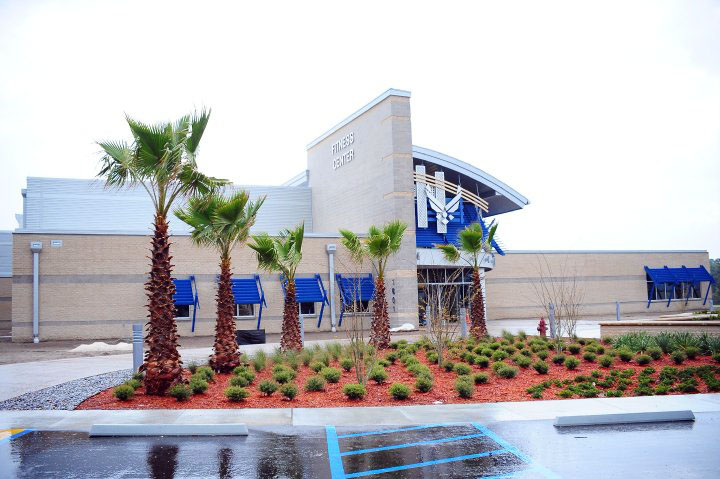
Green building

Officials are set to open a new fitness center at Tyndall Air Force Base, Fla., Aug. 20. The fitness ceneter will be the Air Forces first building to meet the U.S. Green Building Council's Leadership in Energy and Environmental Design Platinum level.